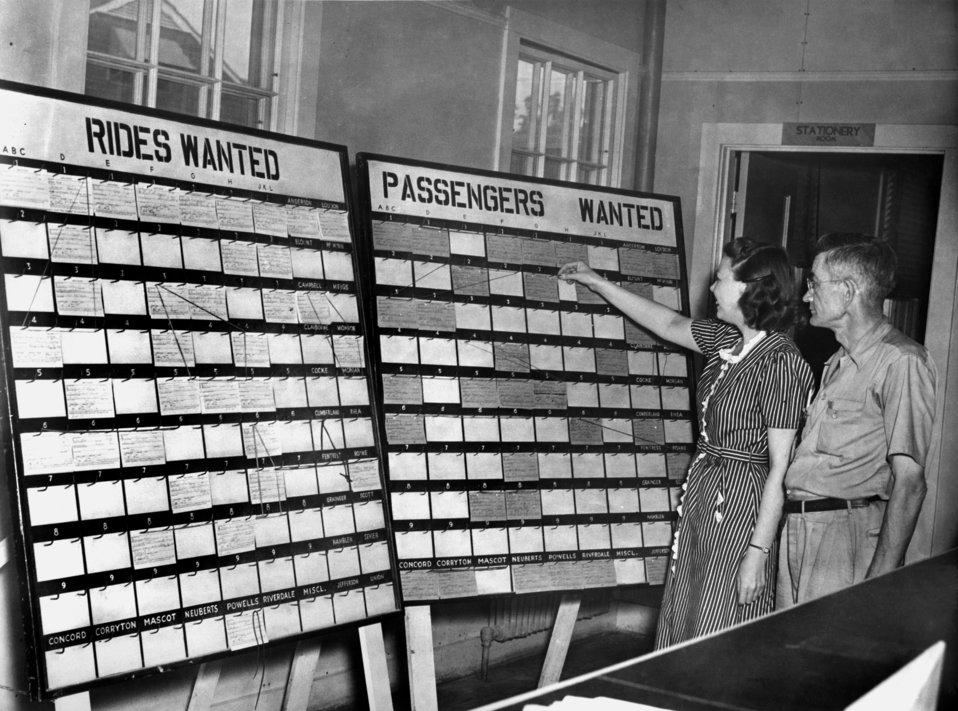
Car Pool Board 1944 Oak Ridge

MED224 DOE photo Ed Westcott 1944 Oak Ridge Tennessee